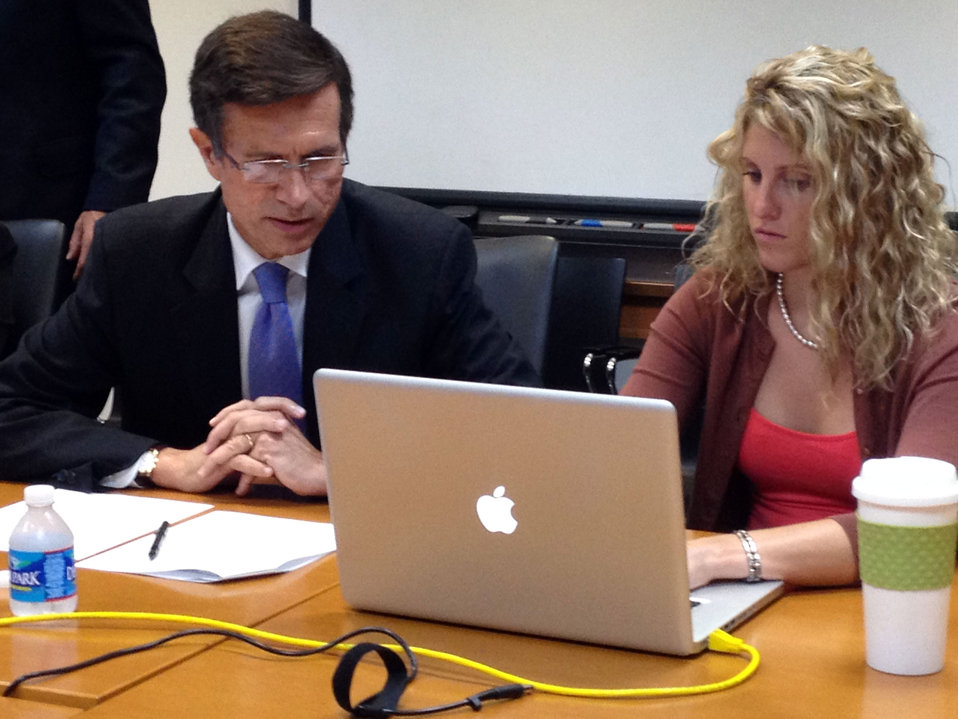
Assistant Secretary Blake Responds to Your Facebook Questions

Assistant Secretary of State for South and Central Asian Affairs Robert O. Blake, Jr., responds to questions during a live Facebook chat at the U.S. Department of State in Washington, D.C., on June 11, 2012.